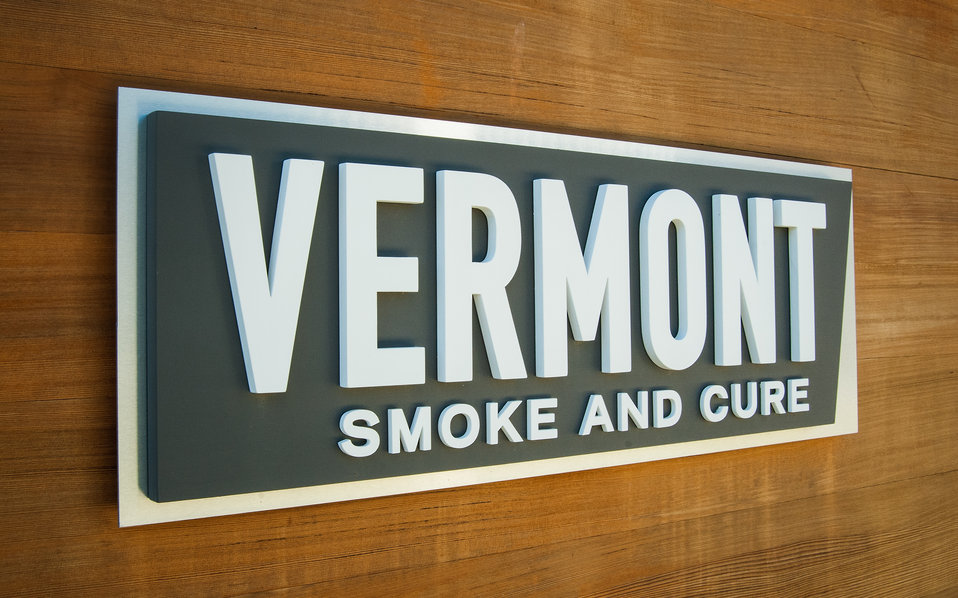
Vermont Smoke and Cure in Hinesburg, VT produces smoked and salt cured beef and pork products from local farms. Vermont Smoke and Cure received a U.S. Department of Agriculture (USDA) Rural Development (RD) Business and Industry Loan program and a Value Added Producer Grant. The loan and grant provided the capital resources necessary for business growth and job creation on Sep. 18, 2013.